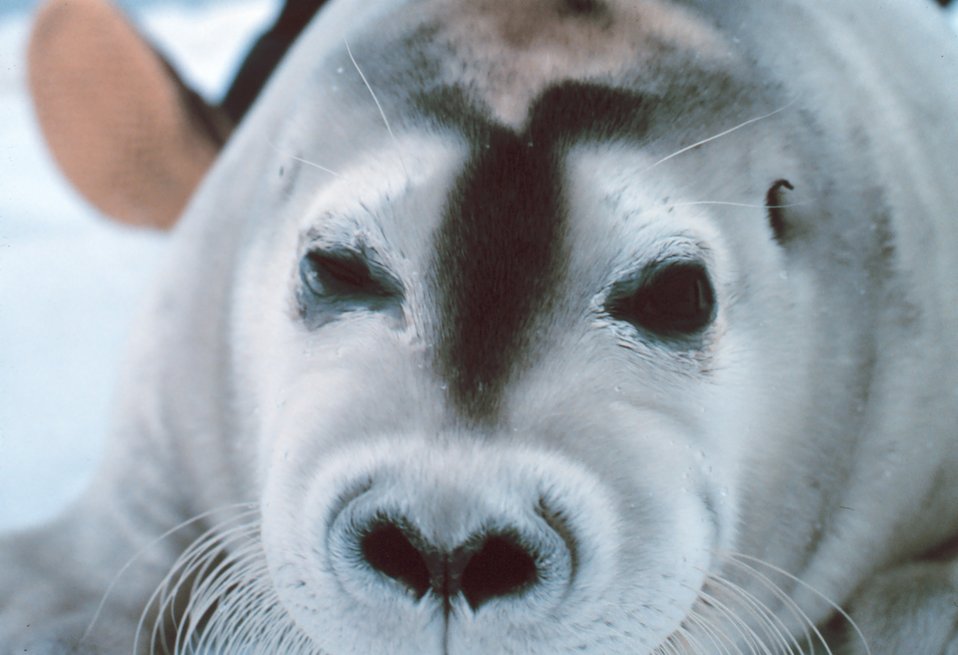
A bearded seal pup - Erignathus barbatus.